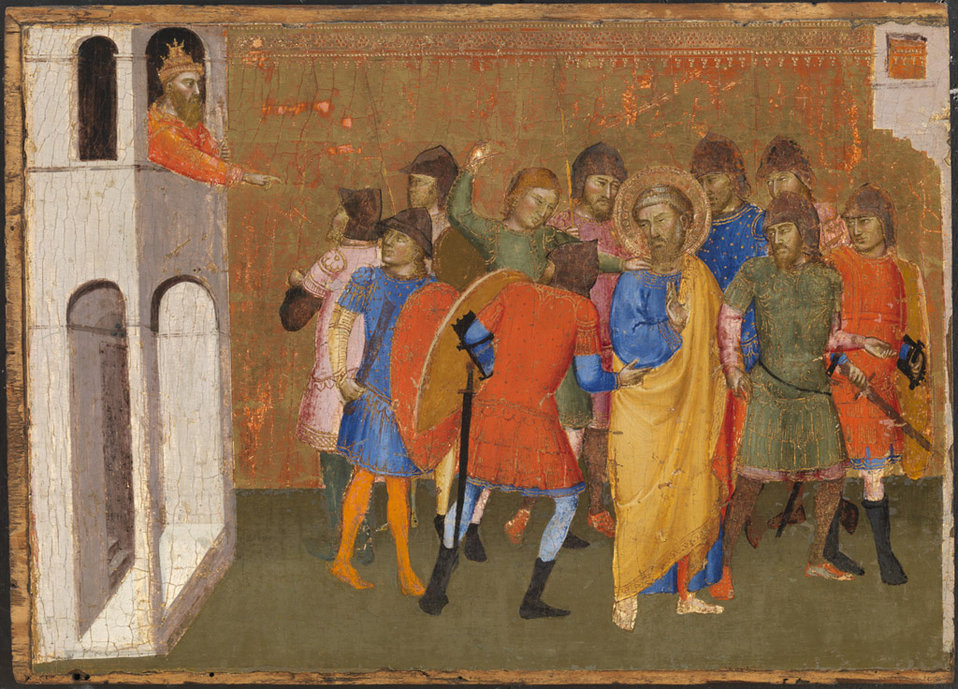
14 Jacopo di Cione Polyptych San Pier Maggiore, detail of predella. 1370-71 Museum of Art, Rhode Island